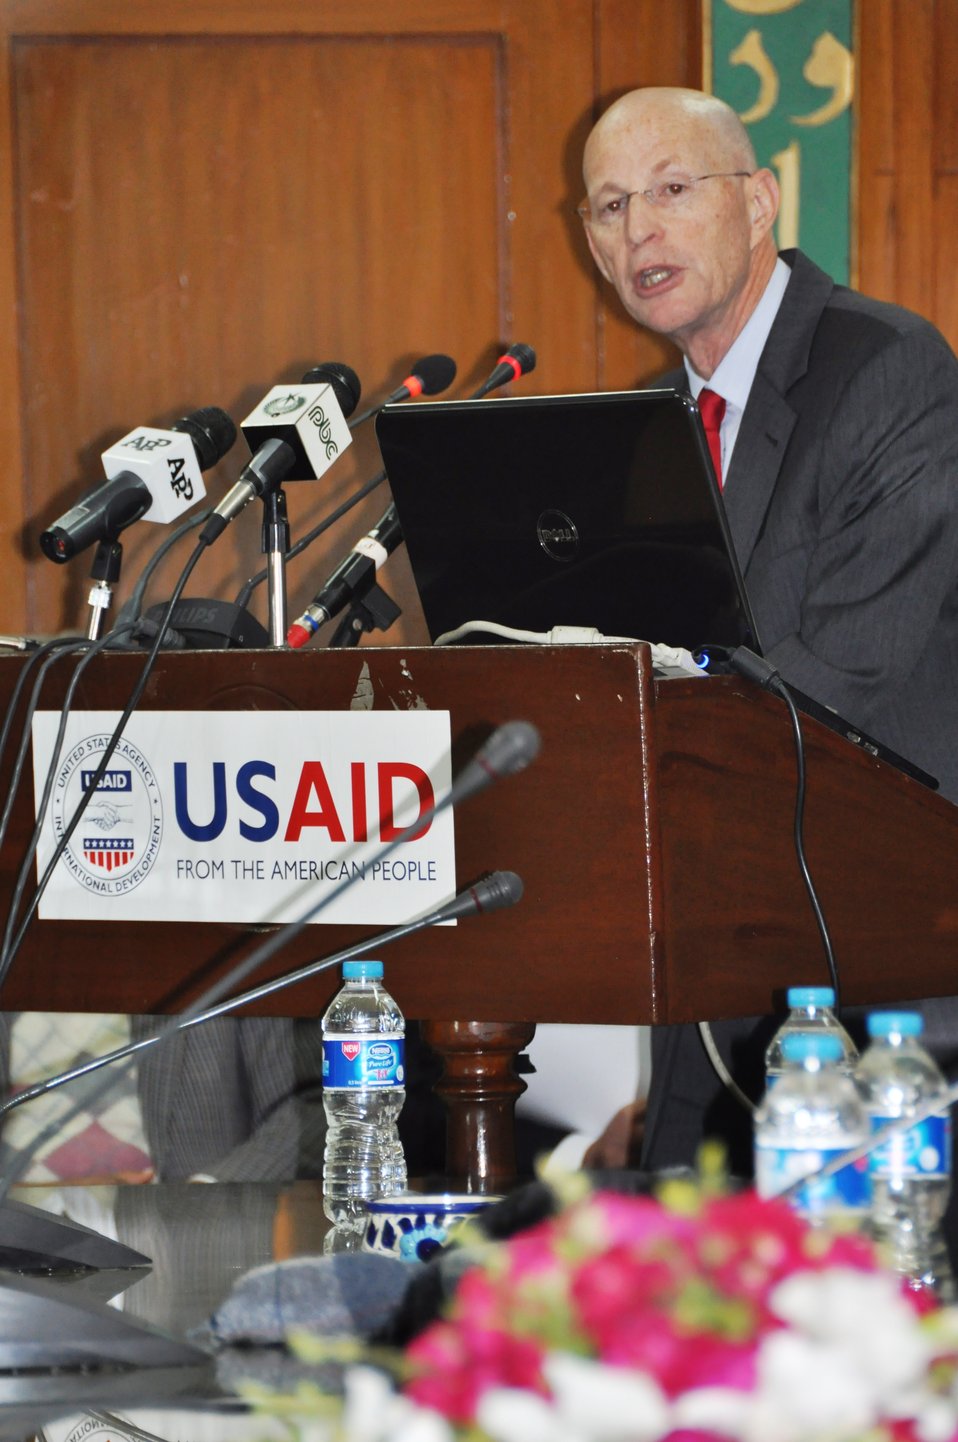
Jan 21, 2014- PSSP Event in Islamabad

“The United States is supporting vibrant and sustained research and development efforts in Pakistan. The U.S. and Pakistan joint efforts in the field of agriculture and economic growth will contribute to a stronger, brighter future for Pakistan,” said USAID’s Mission Director Greggory Gottlieb during his address at the event.